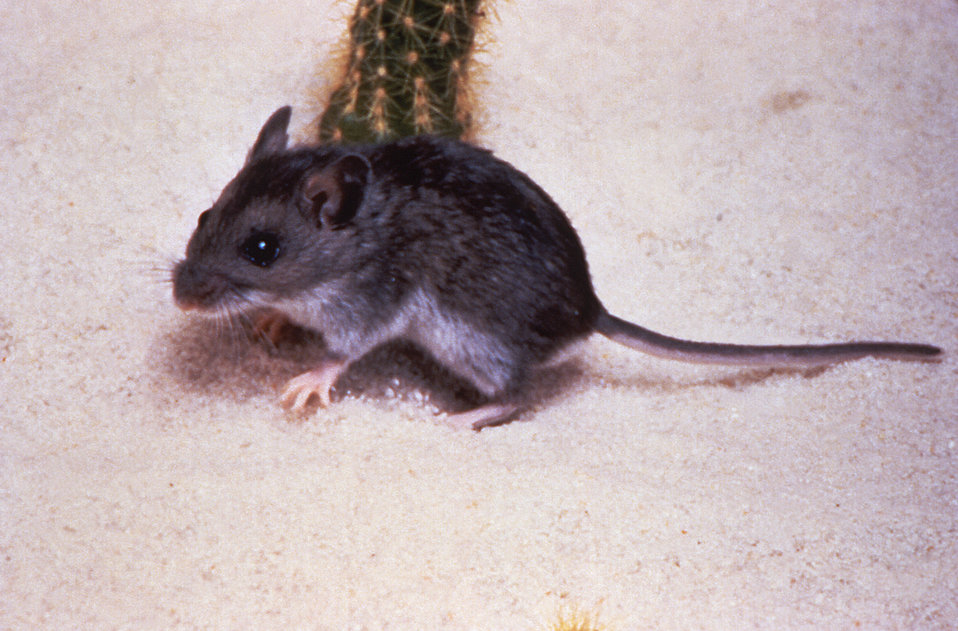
A deer Mouse (Peromyscus maniculatus)